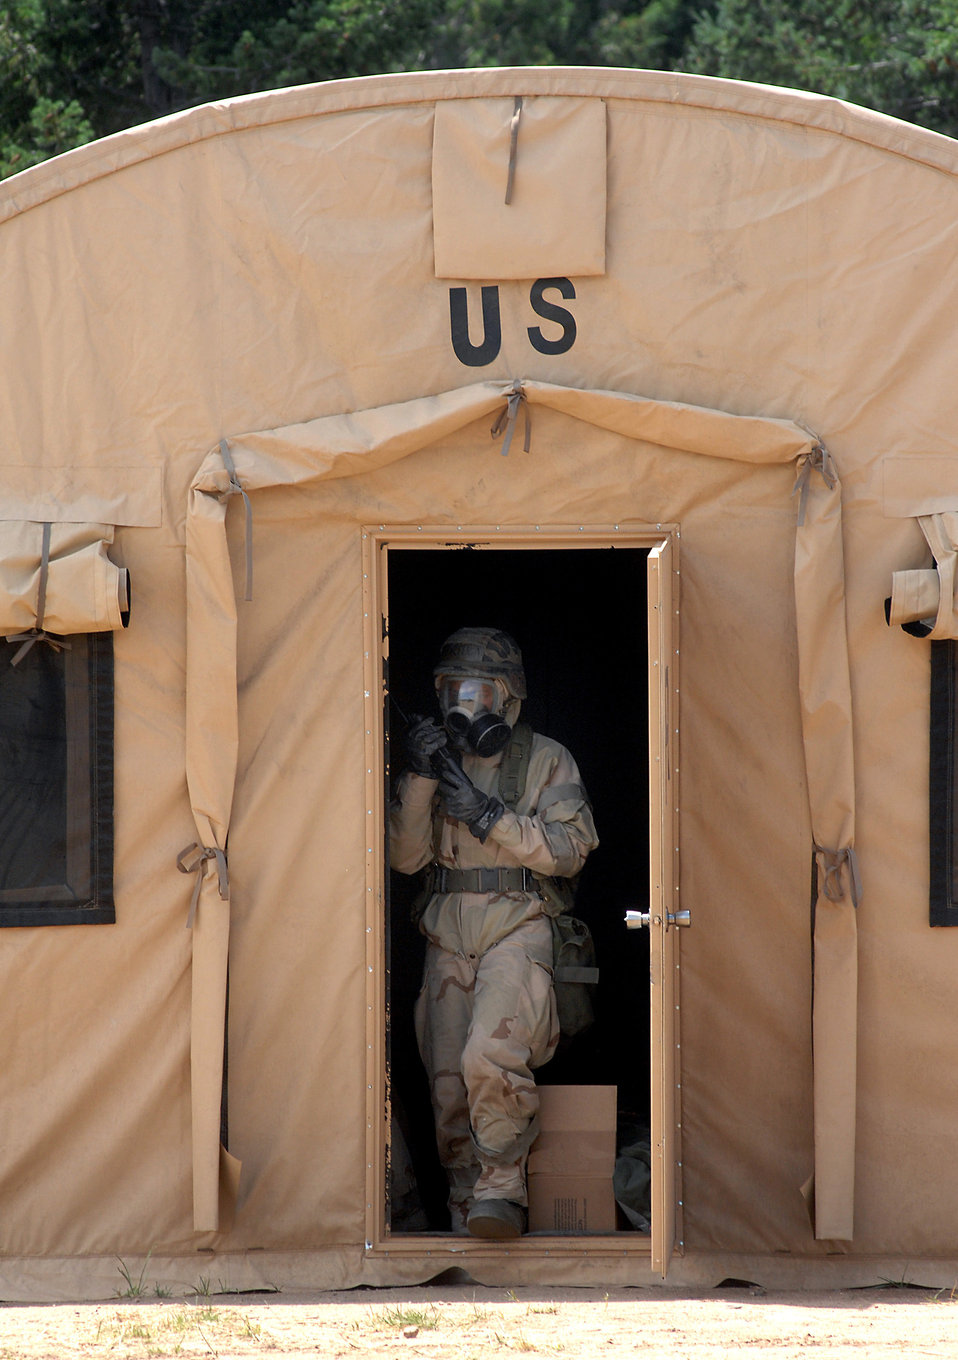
Global Engagement

Cadet Daniel Tortuga waits for Alarm Black to be called over the radio to allow teams to check for